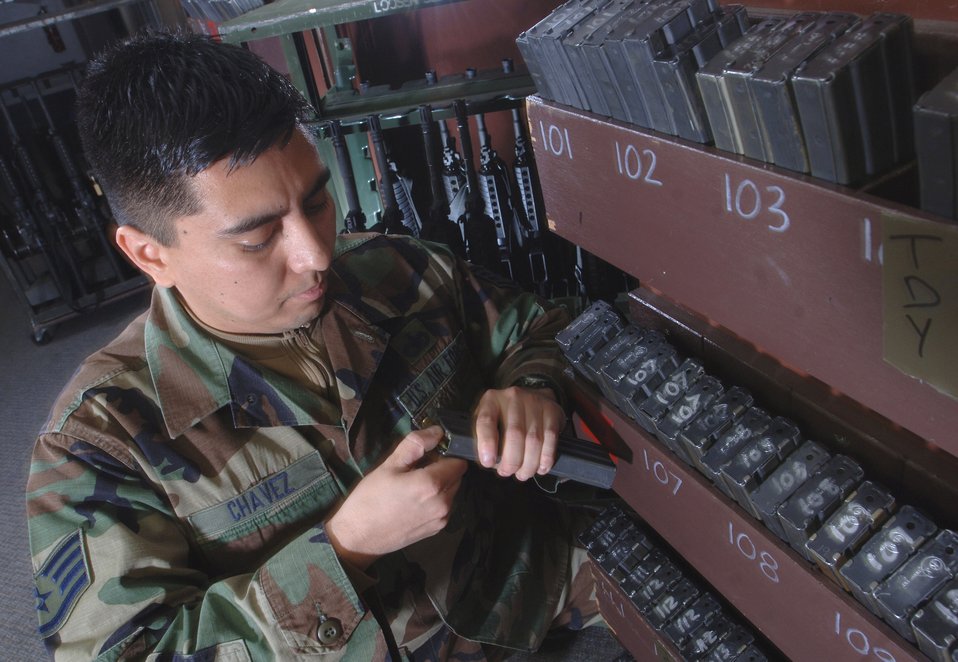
Weapons inspection

YOKOTA AIR BASE, Japan (AFPN) -- Staff Sgt. Roy Chavez inspects M-4 carbine rifle magazines during inventory at the armory here. Sergeant Chavez is assigned to the 374th Security Forces Squadron. The squadron is responsible for protecting Department of Defense facilities, equipment and aircraft worth $2 billion here. They provide information security, confinement services, combat arms training and ensure the readiness of mobility personnel.